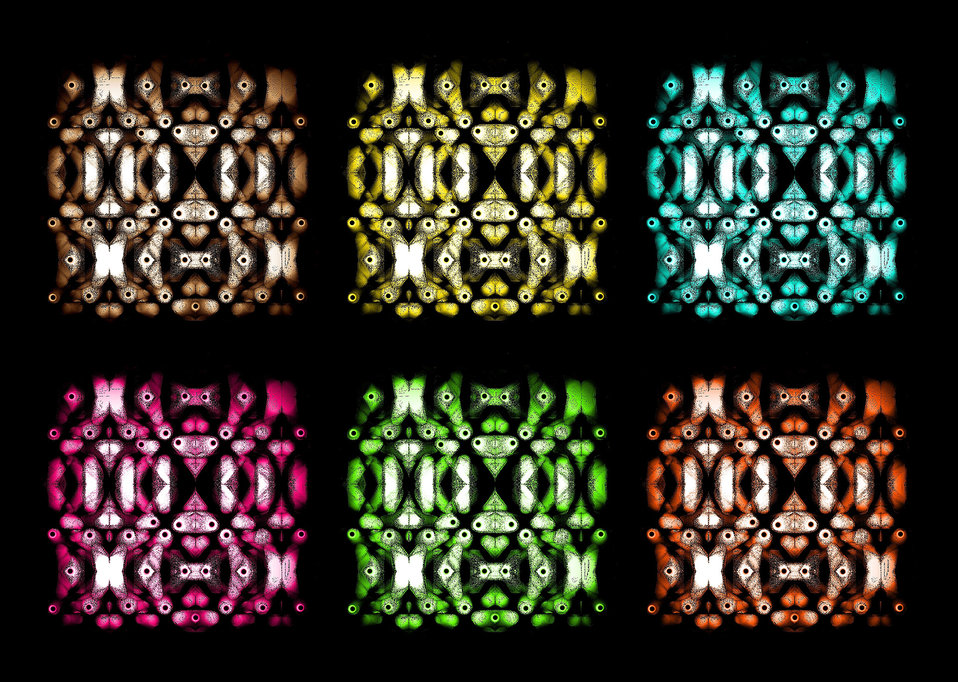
The reasons.